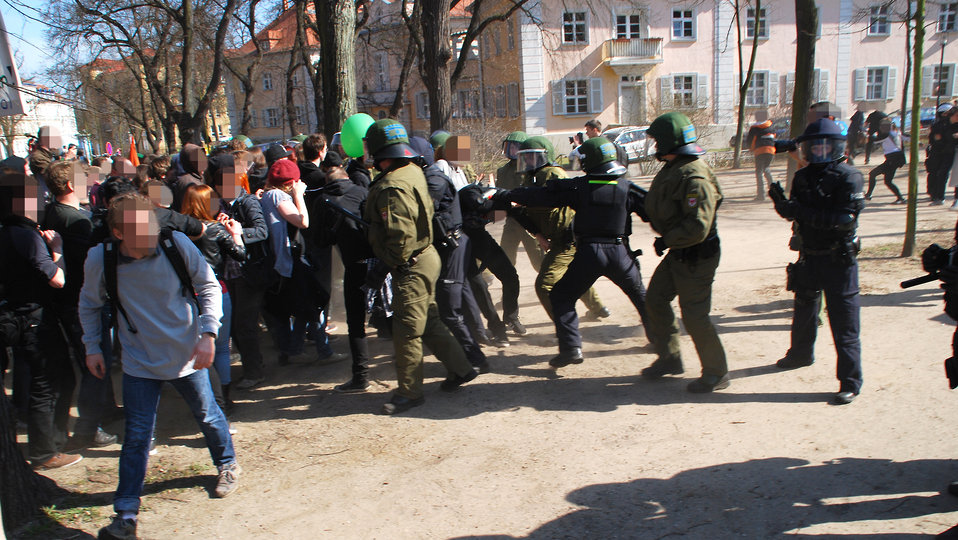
Proteste gegen den Nazi-Aufmarsch am 24.3.2012 in Frankfurt (Oder)